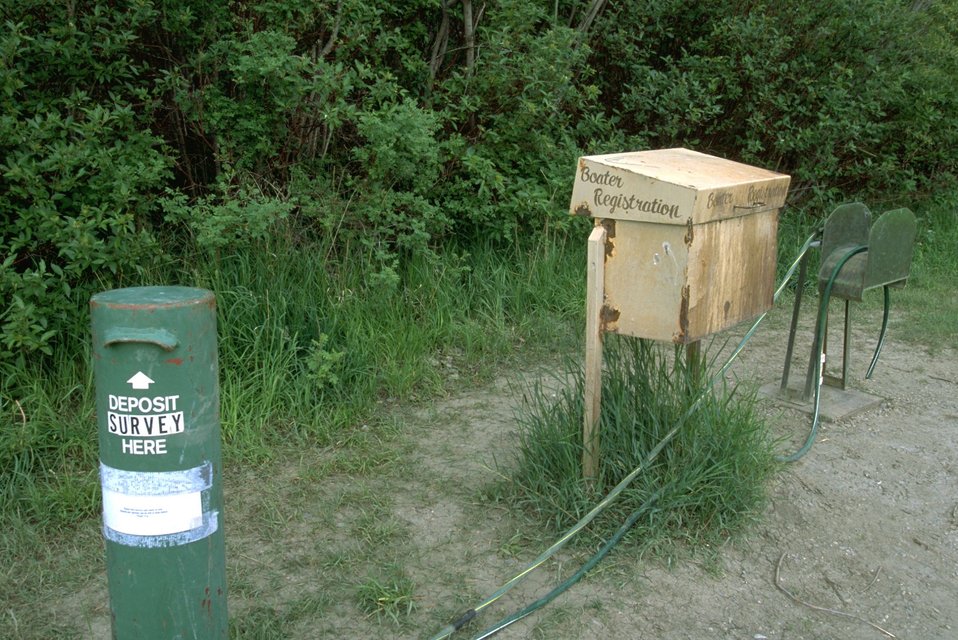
Visitor Survey container and Boater Registration box at Kipp Recreation Site